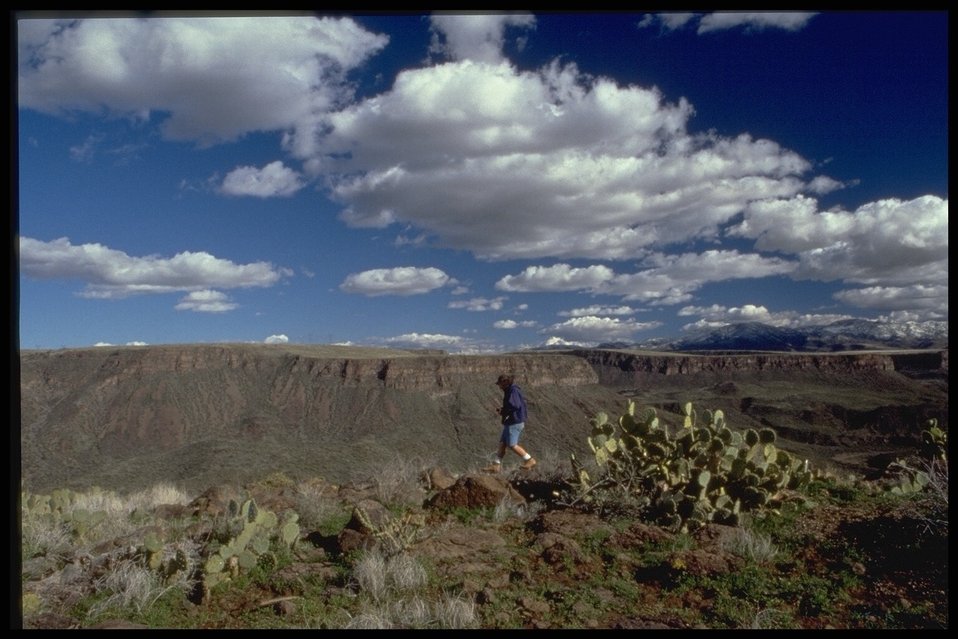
The Agua Fria River Canyon below a cloud peppered Arizona sky. Prickly pear cacti border the rim of the canyon.